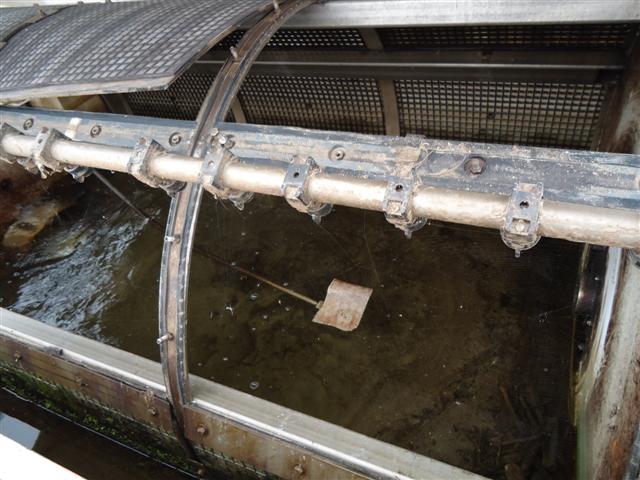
Storm damage at Eisenhower National Fish Hatchery in Vermont

Open drum filled with sediment.